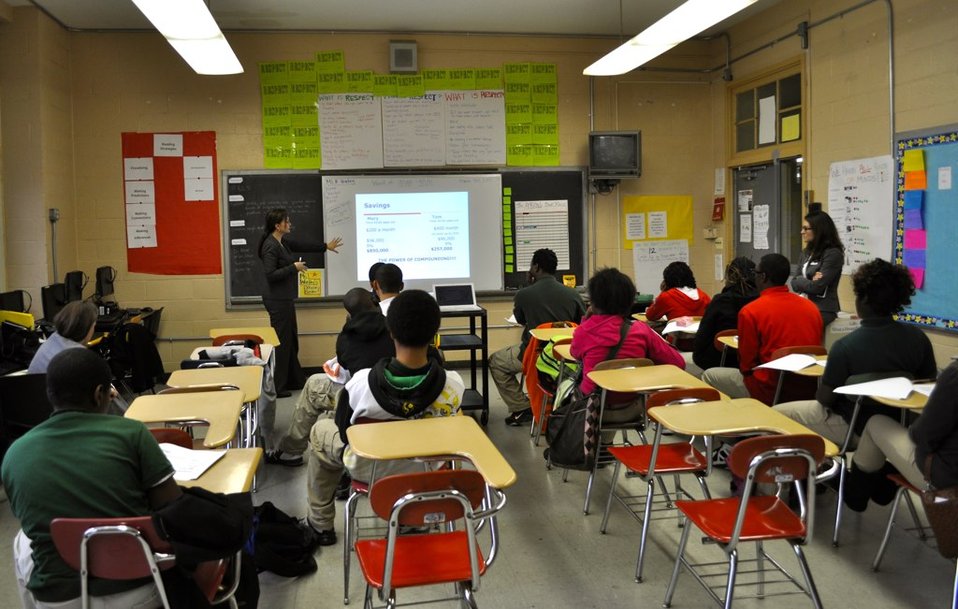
Treasurer Rios Guest Teaching Personal Finance

Treasurer Rios was a guest teacher to a 9th grade class where she went over the basics of personal finance and talked about Treasury's Financial Capability Challenge (www.challenge.treasury.gov).